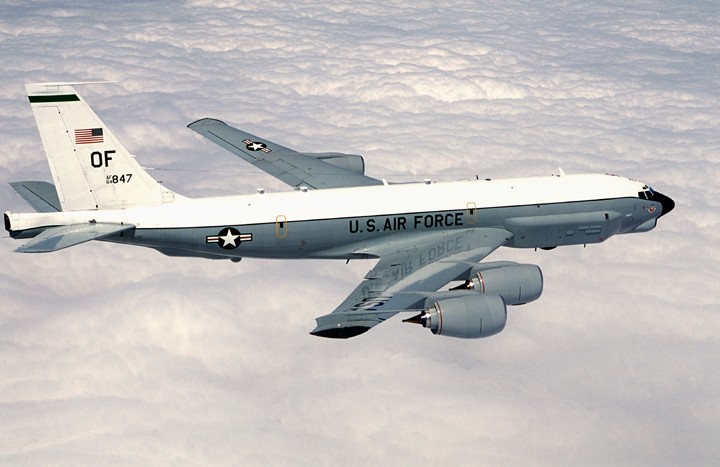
RC-135U Combat Sent

OVER GREENVILLE, Texas -- An RC-135U Combat Sent aircraft flies a training mission from Offutt Air Force Base, Neb. The RC-135U aircraft are manned by Air Combat Command crews from the 45th Reconnaissance Squadron and the 97th Intelligence Squadron.